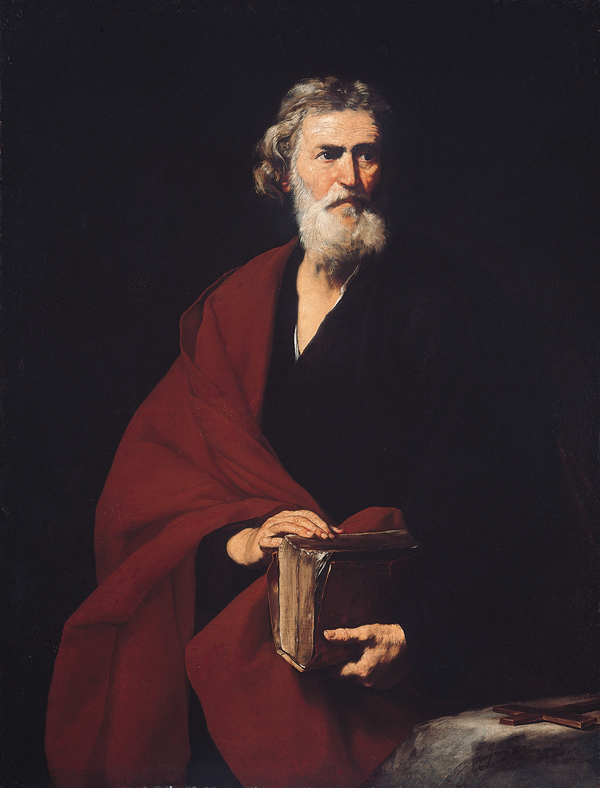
'Saint Matthew', oil on canvas painting by Jusepe de Ribera, 1632